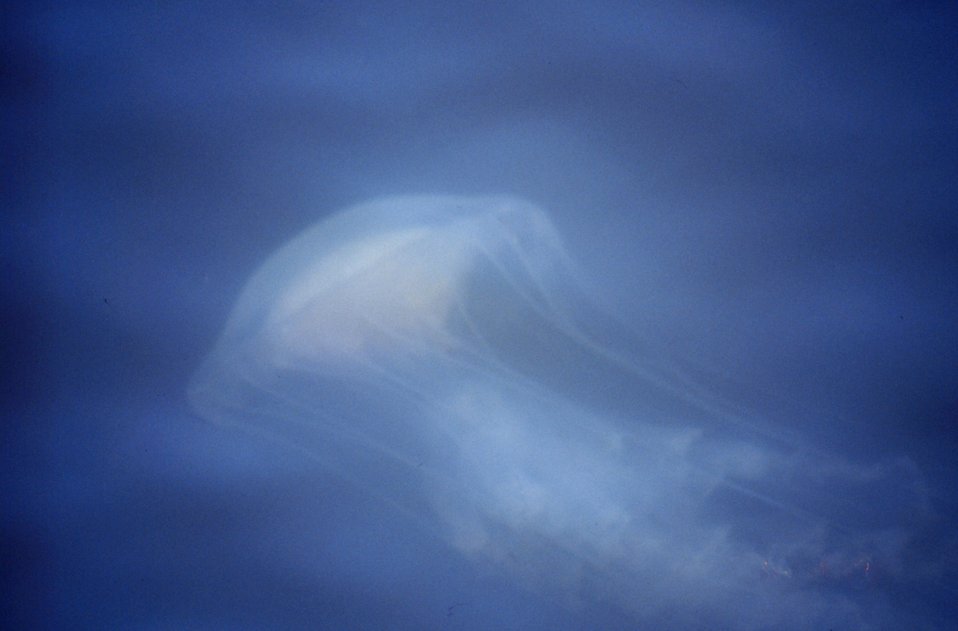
The bane of Chesapeake Bay swimmers, the stinging sea nettle, Chrysaora quiquecirrha.